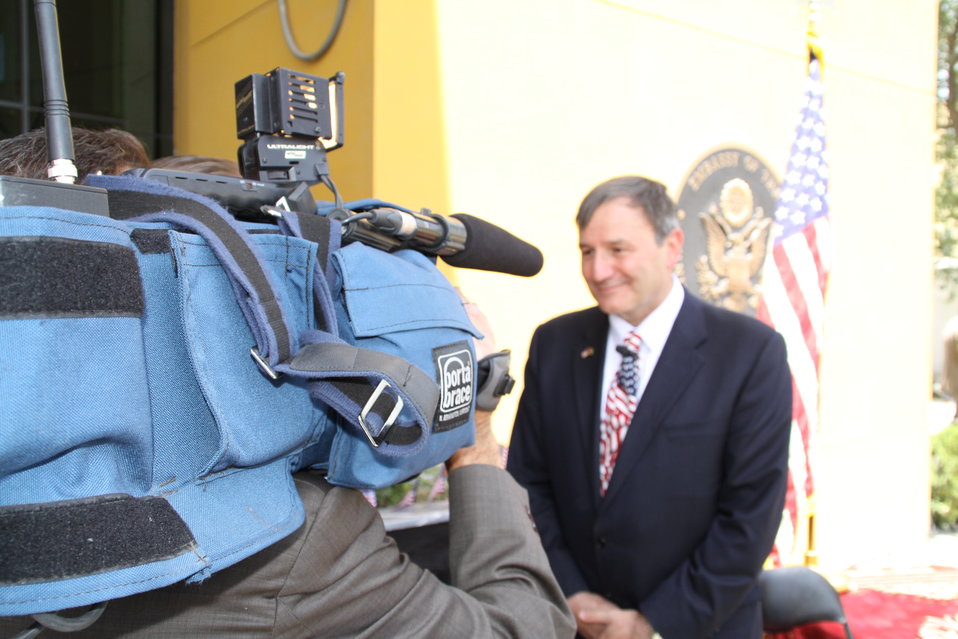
Kabul Official July 4th Celebration